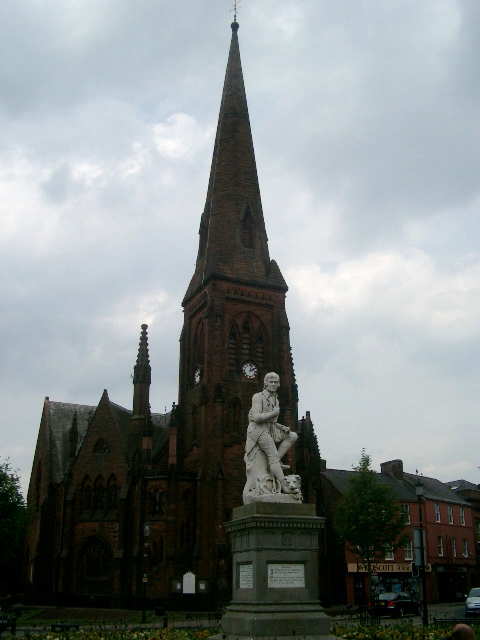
Burns statue and Greyfriars church in Dumfries